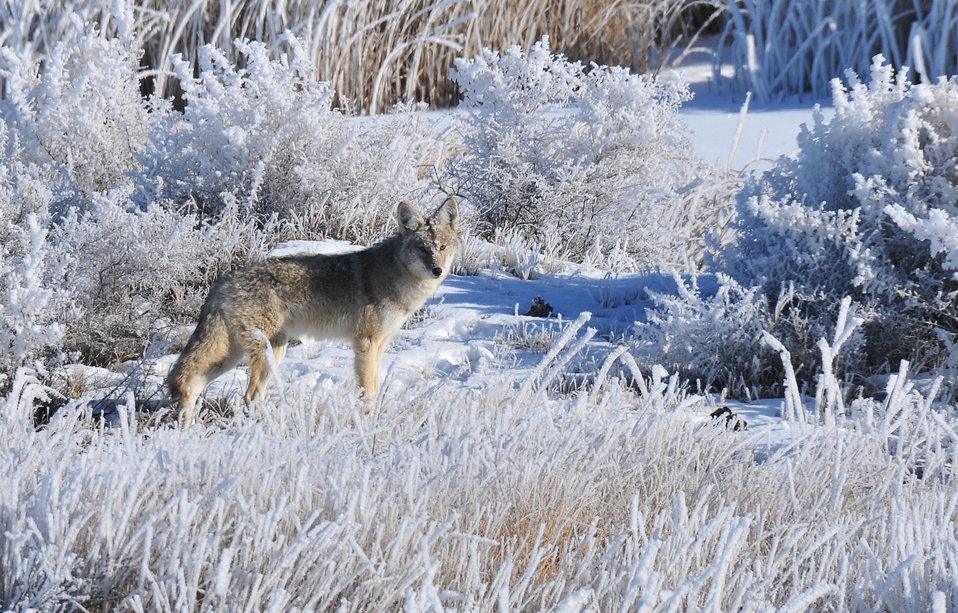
Coyote in hoar frost on Seedskadee NWR

Hoar frost forms during the winter when there is evening fog and no wind. In the morning, as soon as the wind blows or the sun begins to shine, the hoar frost is quickly gone. This coyote was looking for a morning breakfast of meadow vole on Seedskadee National Wildlife Refuge.